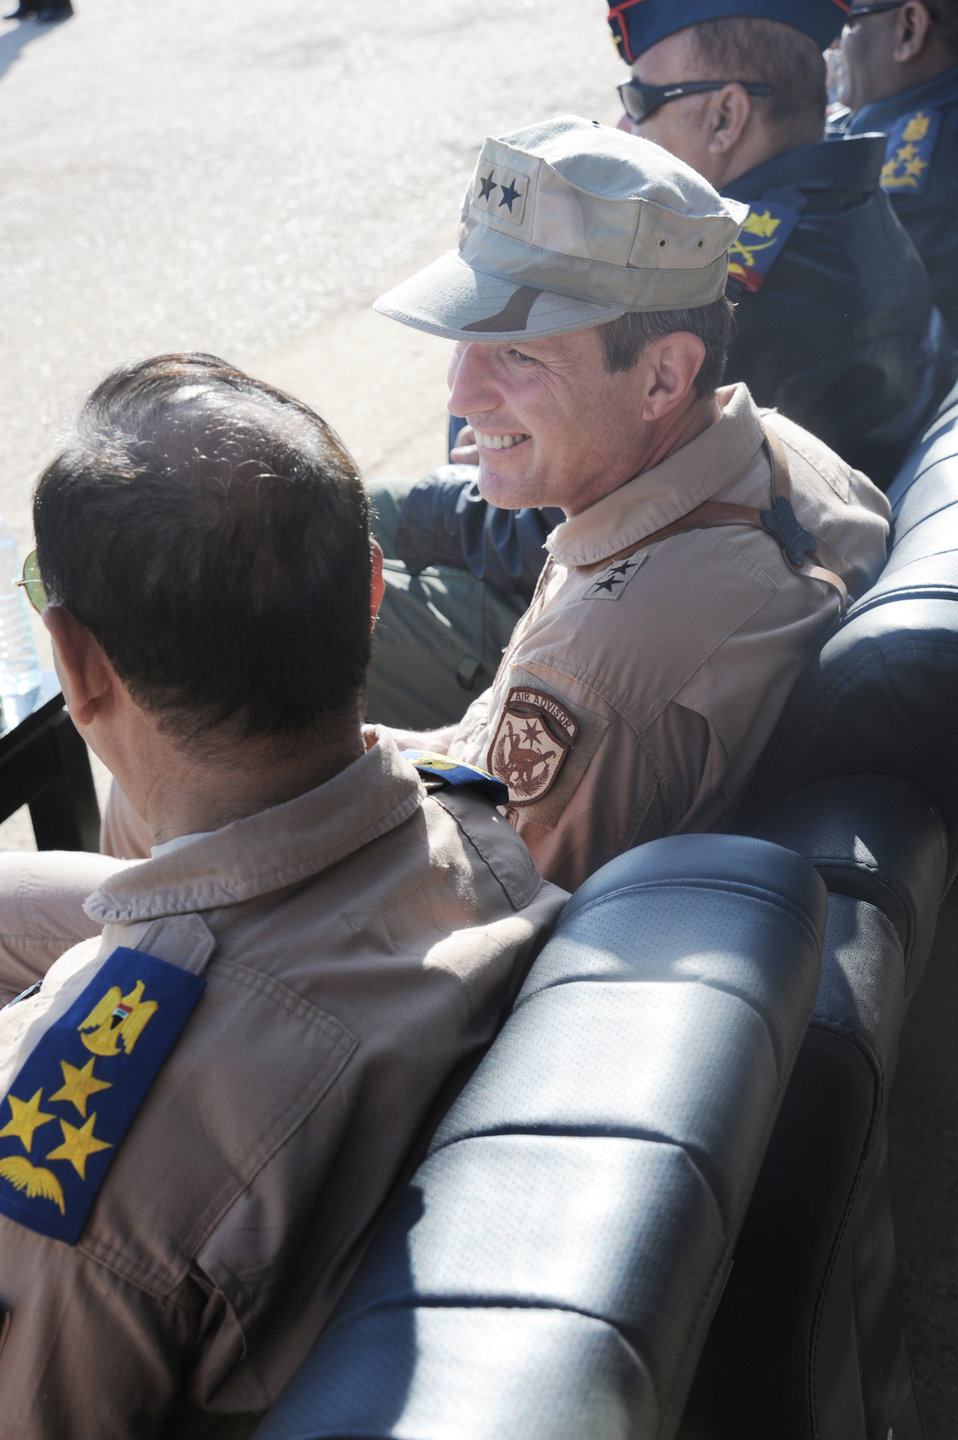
New recruits get a leg up

Maj. Gen. Robert Kane watches a pass in review parade during a basic military training Top Off course graduation ceremony at the Iraqi Air Force Training School Dec. 28, 2009, at Camp Taji, Iraq. General Kane observed more than 330 Iraqi air force recruits graduate from the course. General Kane is the Air Force Director for the Iraq Training and Advisory Mission.